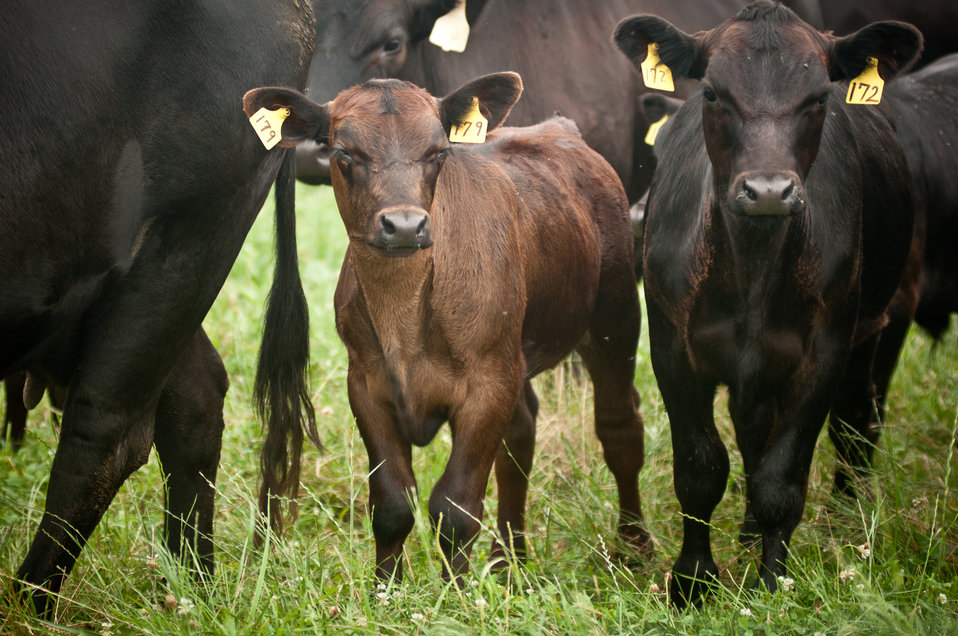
Black Angus cows and calves graze organic pastures, and for added nutrition and variety, they enjoy a daily feeding of sweet silage at Nick’s Organic Farm, owned by Nick Maravell, in Adamstown, MD on Friday, July 12, 2013. The white plastic wrapped bales of pasture grass and alfalfa have been fermenting for months to create sweet silage that stores well and can be used to feed cattle at varying amount all year long. The fermentation process sweetens the taste and increases the vitamin levels. The farm produces Black Angus beef, chicken, turkey, eggs, hay, soybeans, corn, alfalfa, orchard grass, rye; and other crops. The cattle are 100% grass-fed receiving certified organic pasture, certified organic hay (in winter), water and mineral salts mixed with sea kelp. The cattle are not fed hormones, antibiotics or animal products. Poultry feed from grain is ground from organic grain. The poultry also graze on organic pastures. The farm has conducted on-farm research with federal, state and non-profit agencies to refine organic practices. An organization such as the U.S. Department of Agriculture (USDA) Agricultural Research Service (ARS) center in Beltsville has been able to conduct research to improve organic crops and to breed and manage the cattle so that they have.